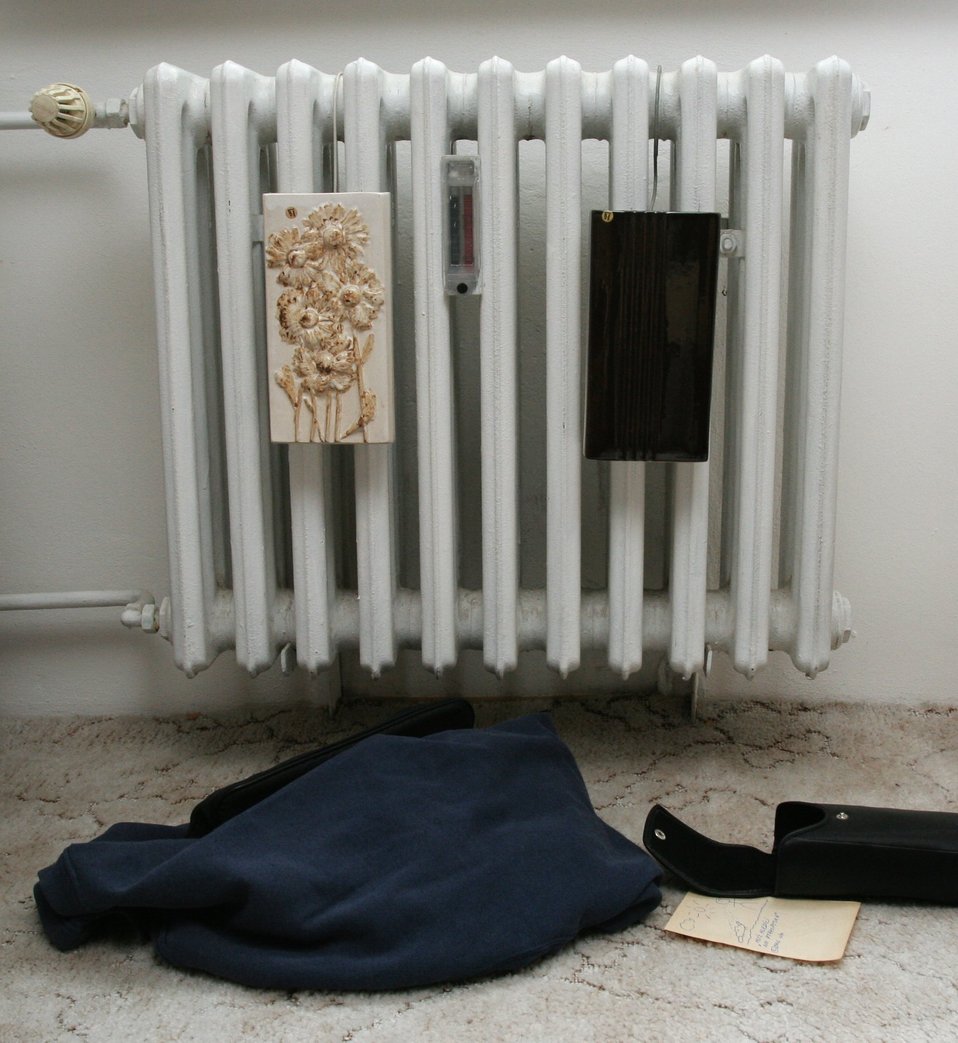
Čeština: Radiátor pro Wikipedie:Nefoťte obálky